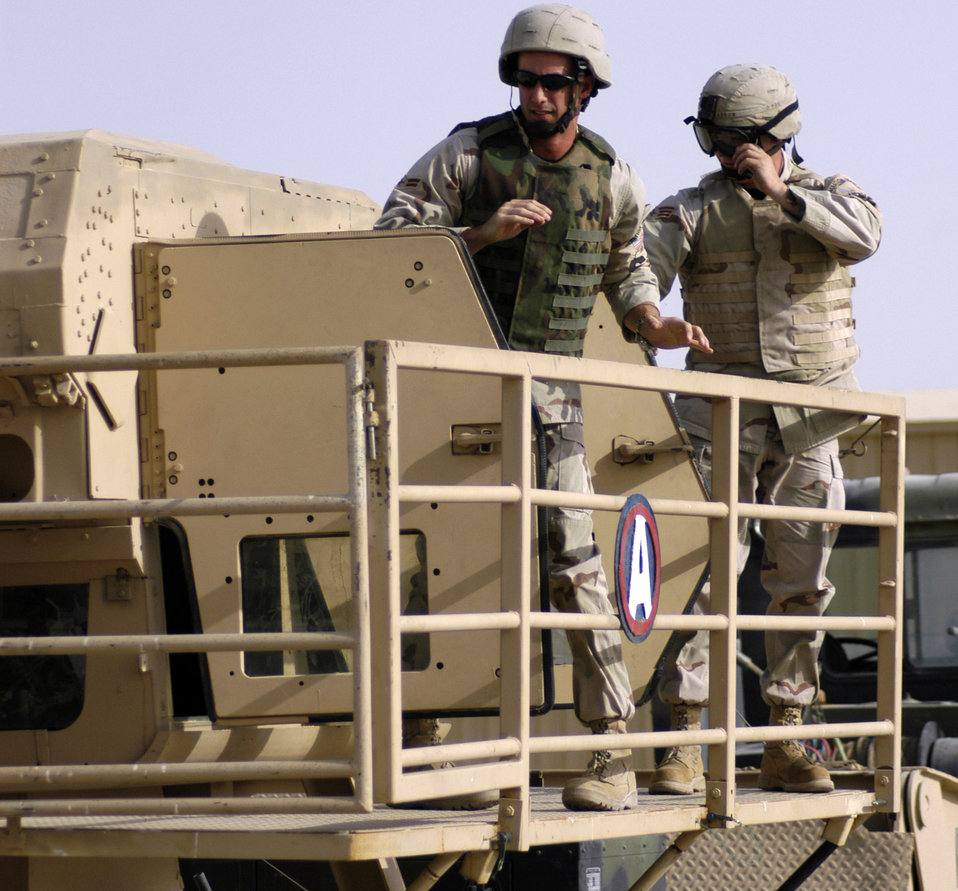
Security forces members battle HEAT

Airman 1st Class Jason Tinnin and Senior Airman Shane Larson exit the Humvee egress assistance trainer on July 17 at a forward operating base in Southwest Asia. The trainer aids military members with instruction on how to escape from a Humvee that has rolled over and how to avoid such accidents. Airman Tinnin is deployed from Scott Air Force Base, Ill., and Airman Larson is deployed from Grand Forks Air Force Base, N.D. Both are assigned to the 386th Expeditionary Security Forces Squadron.